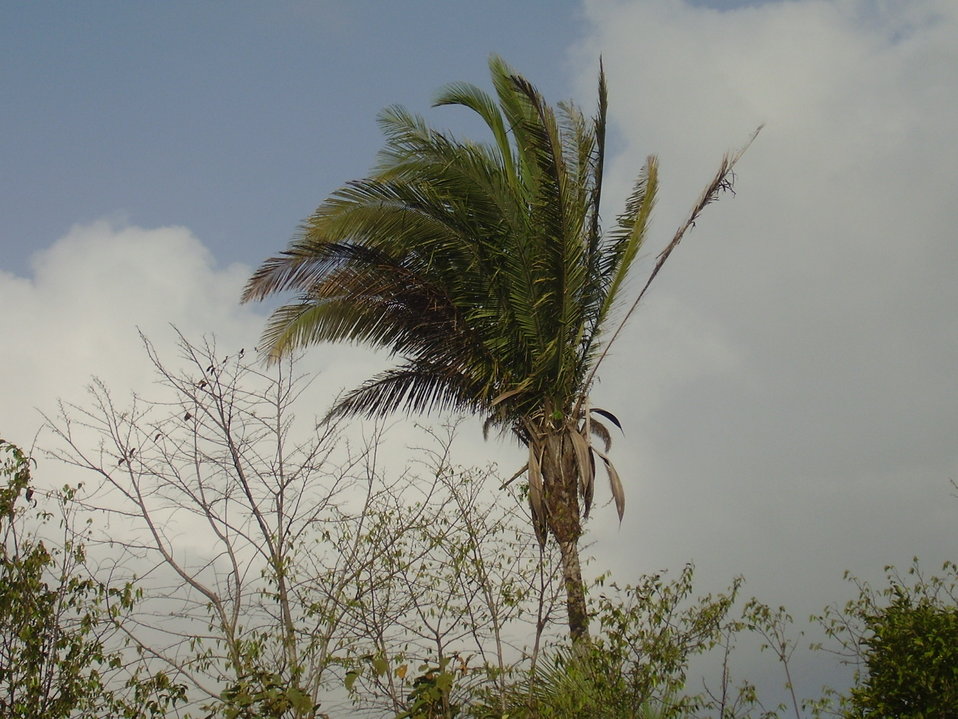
Português: Babaçu Babassu palm